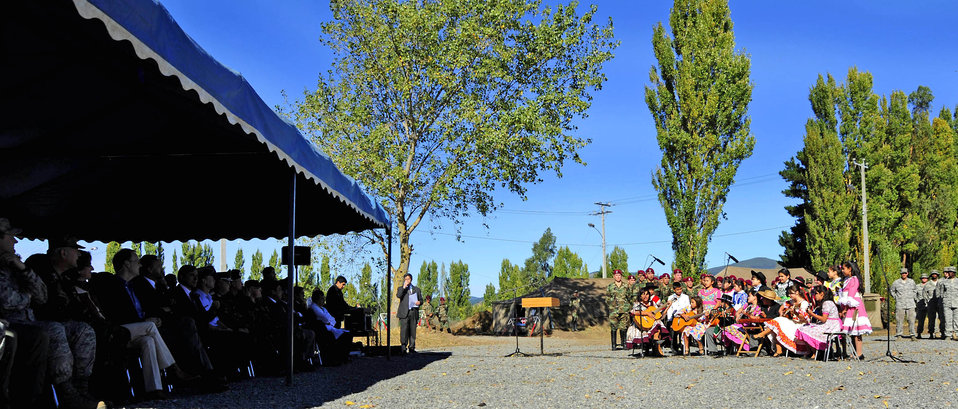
Airmen complete humanitarian mission in Chile

Chilean children perform during a ceremony March 24, 2010, in Angol, Chile. Members of the Air Force Expeditionary Medical Support team completed a humanitarian mission to build an expeditionary hospital and augment medical care for members of the Angol community March 26. A team of Airmen built, staffed and equipped a field hospital to serve more than 110,000 people in the Angol region.